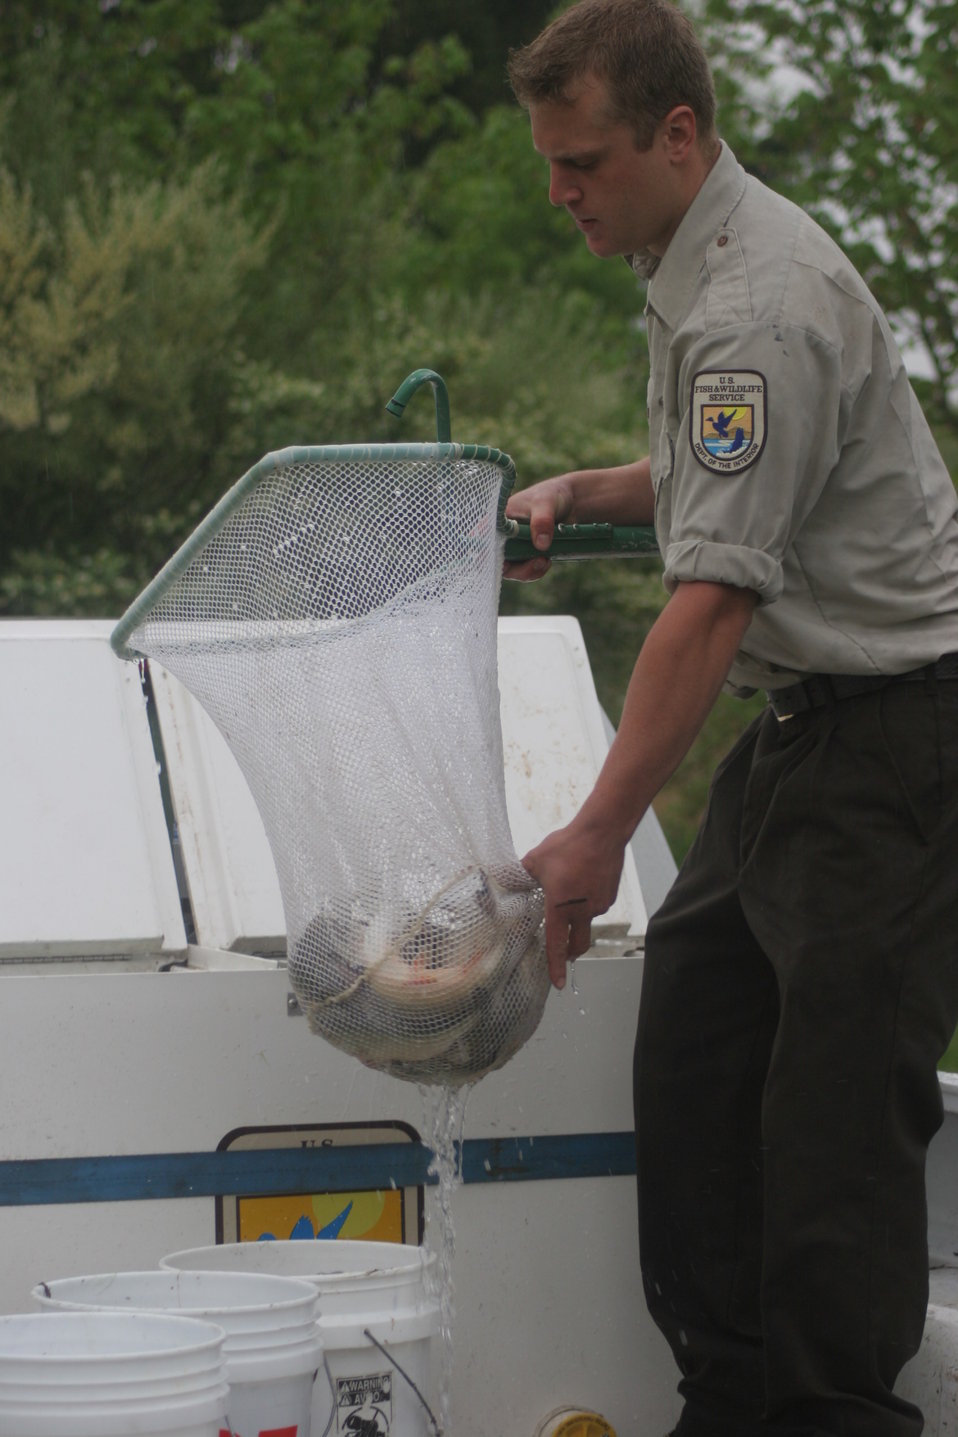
Stocking the pond

Fishing event at U.S. Fish and Wildlife Service Regional Office in Hadley, MA